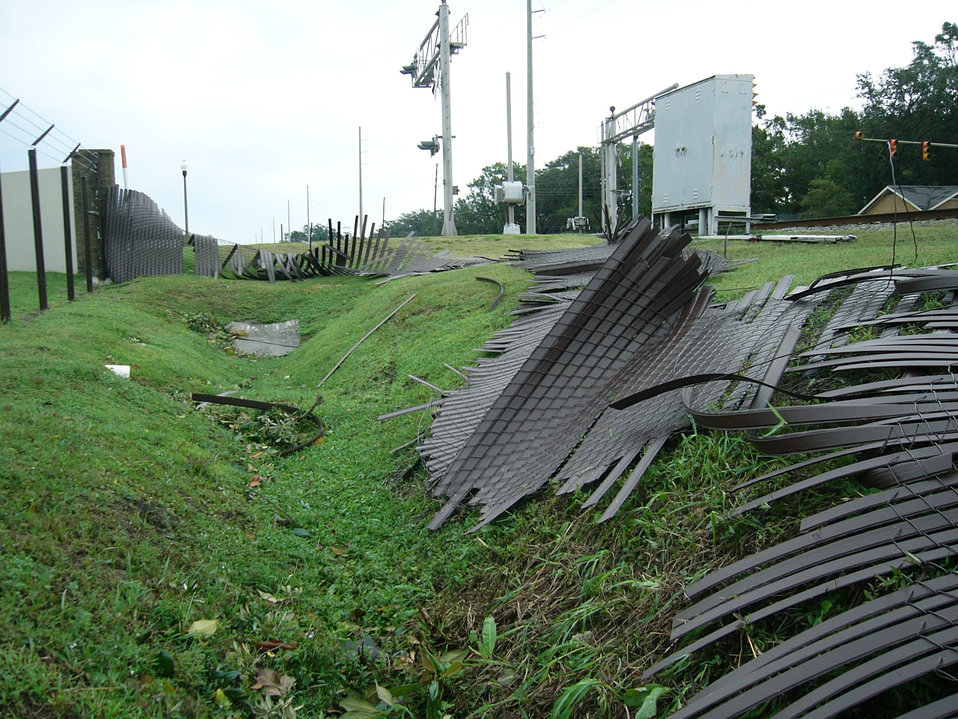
Ivan's wrath

KEESLER AIR FORCE BASE, Miss. -- Hurricane Ivan arrived here early Sept. 16 damaging the base's perimeter fence.